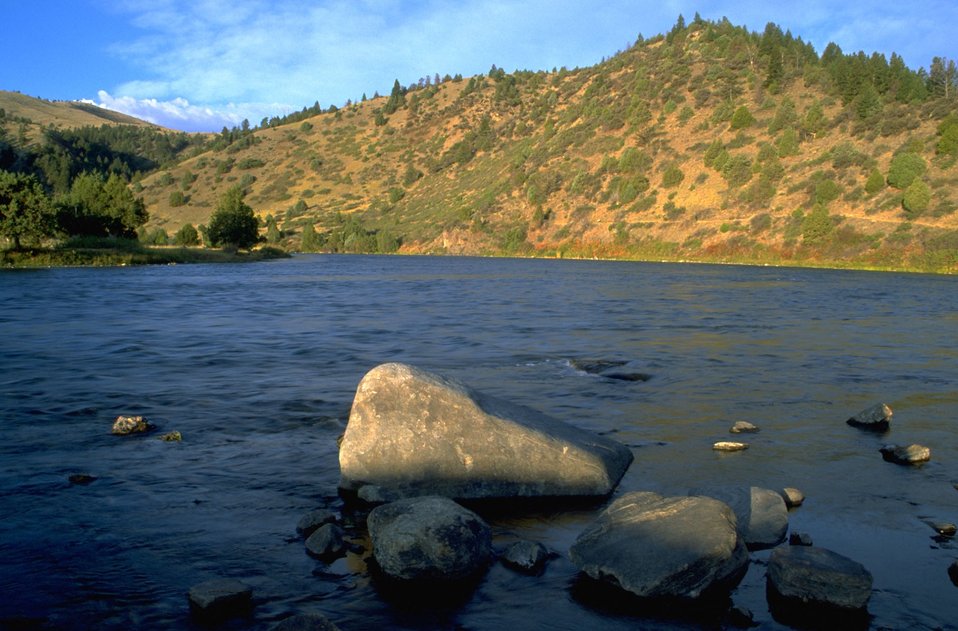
A large rock in the Madison River